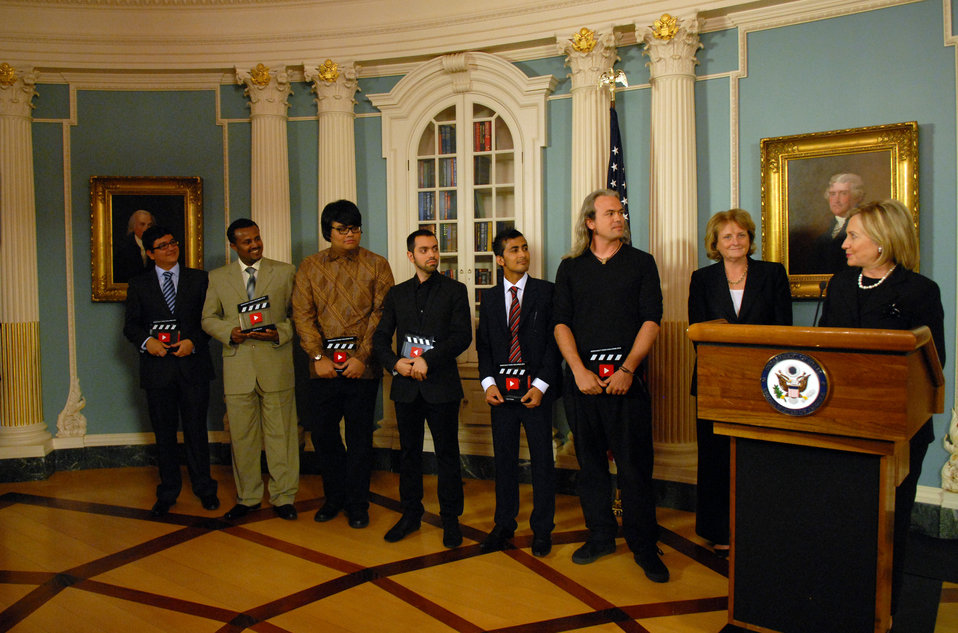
Secretary Clinton Congratulates the 2010 Democracy Video Challenge Winners

U.S. Secretary of State Hillary Rodham Clinton (right) congratulates the 2010 Democracy Video Challenge winners, with Under Secretary of State for Public Diplomacy and Public Affairs Judith McHale (second from right) at the U.S. Department of State in Washington, D.C., on September 10, 2010.